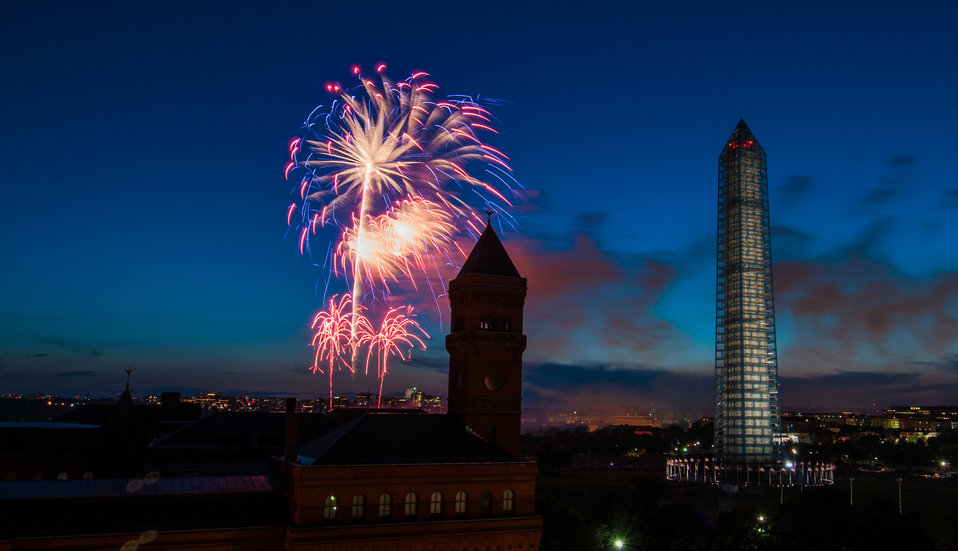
4th of July fireworks as seen from the U.S. Department of Agriculture (USDA) headquarters building, with the USDA Forest Service Yates Building in the foreground, left, and the Washington Monument in Washington, D.C., on July 4, 2013.